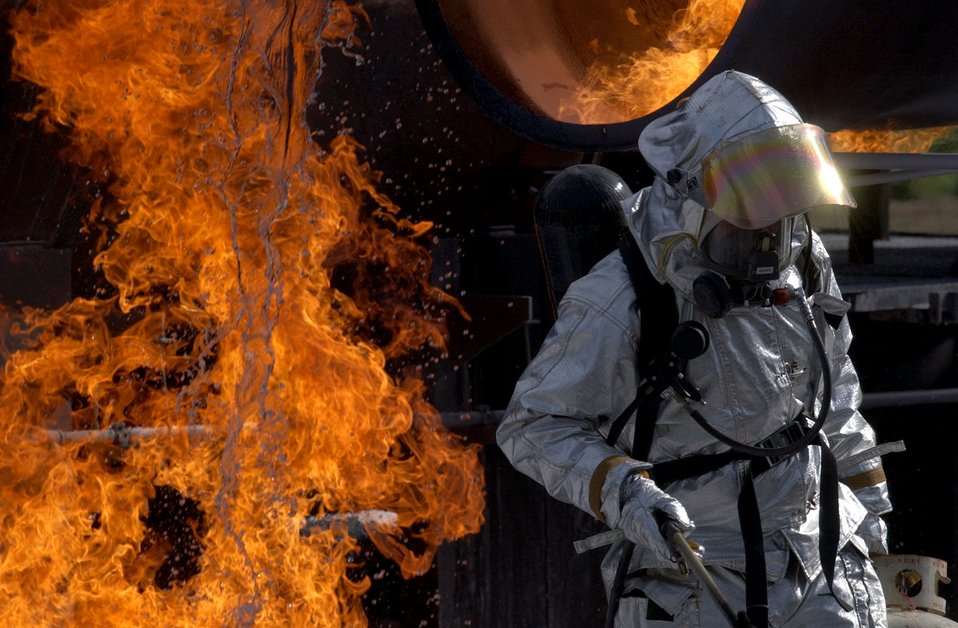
Feeling the heat

CHARLOTTE, N.C. (AFPN) -- A firefighter from the North Carolina Air National Guard's 145th Air Wing lights a training fire for the 916th Air Force Reserve Fire Protection Flight. The flight was performing their annual recertification training.